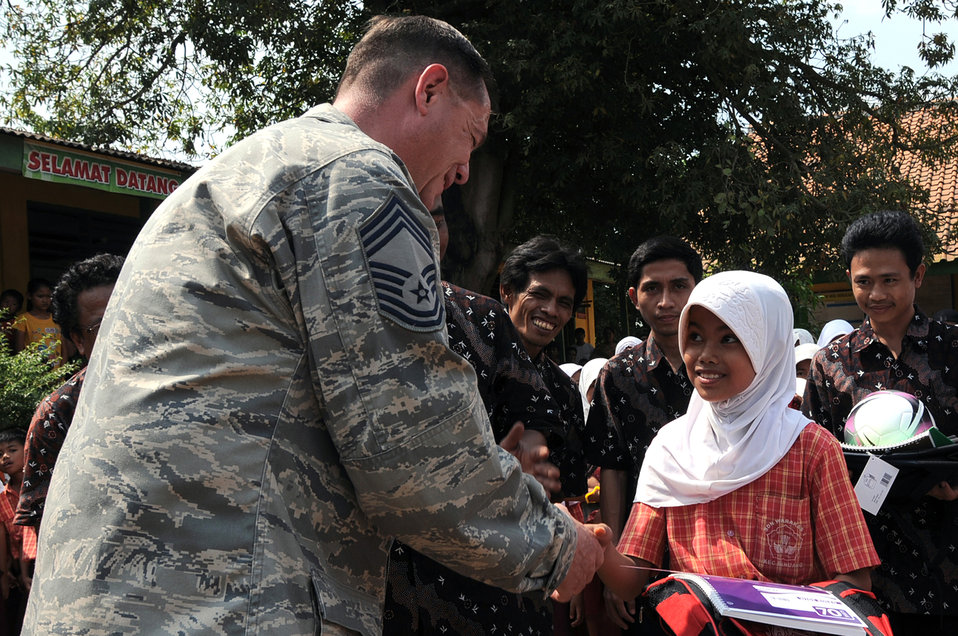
Yokota Airmen deliver school supplies to Indonesian school

Chief Master Sgt. Terry Webb gives school supplies to an Indonesian schoolgirl June 23, 2011, during a goodwill visit to an elementary school in Binguang district, Indonesia, as part of Cope West 11. Chief Webb is the first sergeant with the Cope West 11 detachment from Yokota Air Base, Japan.